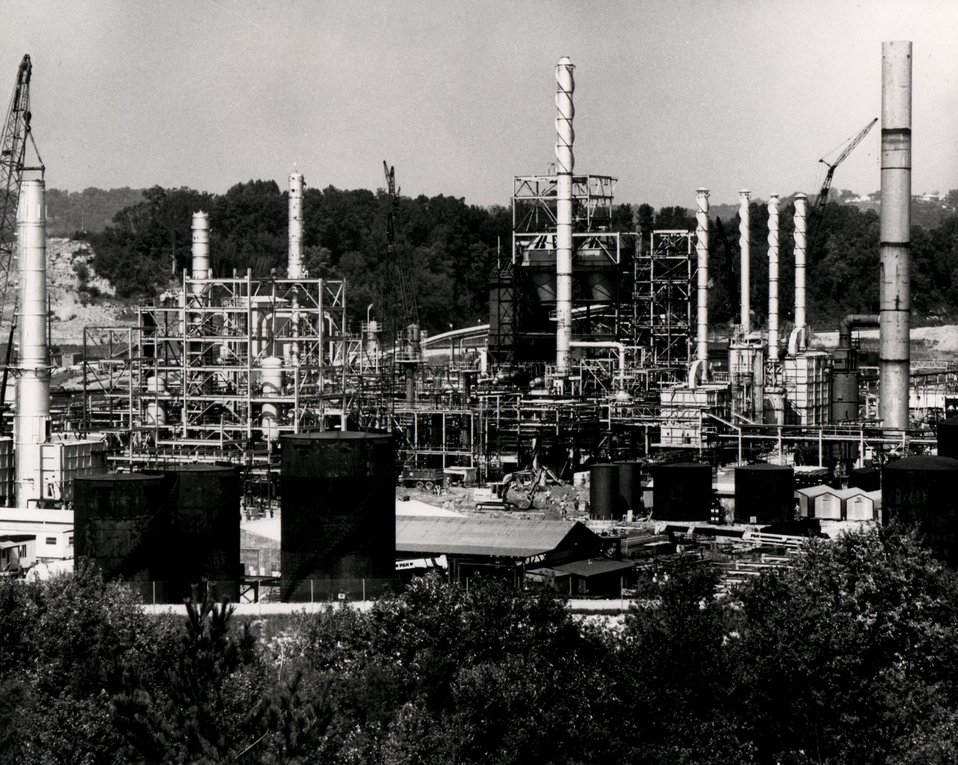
An overview of the H-Coal Pilot Plant. Circa 1979.